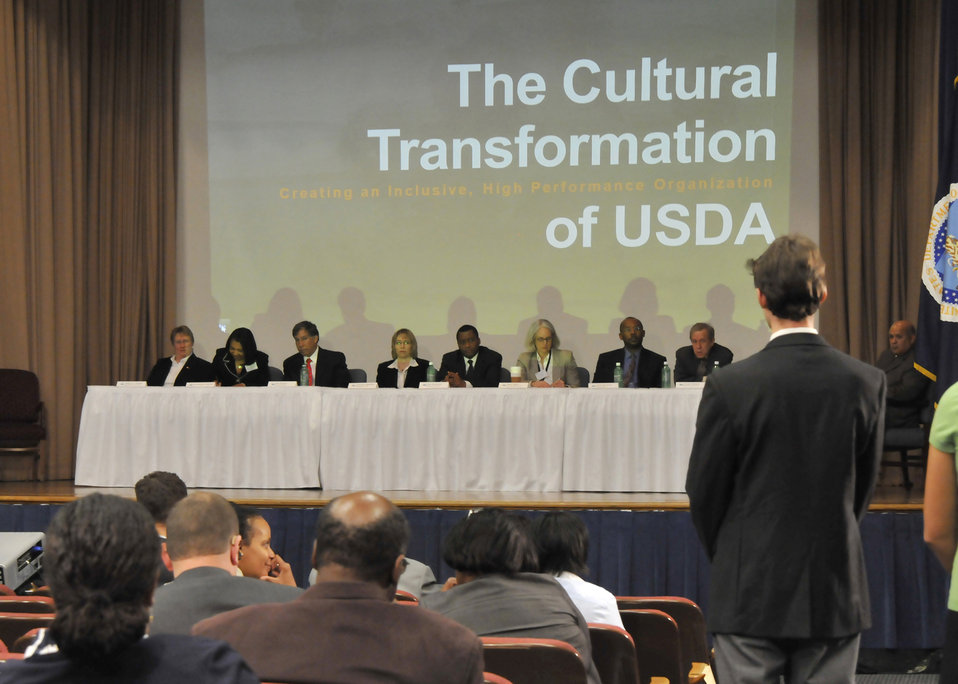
A U.S. Department of Agriculture employee speaks to the panel at the first of six Cultural Transformation Employee Listening Sessions held in the U.S. Department of Agriculture Jefferson Auditorium, in Washington, DC., on Wednesday, March 31, 2010. USDA is undergoing a process to transform the culture of the agency by creating a diverse, inclusive, and high-performance organization. USDA photo 10di1288-18.